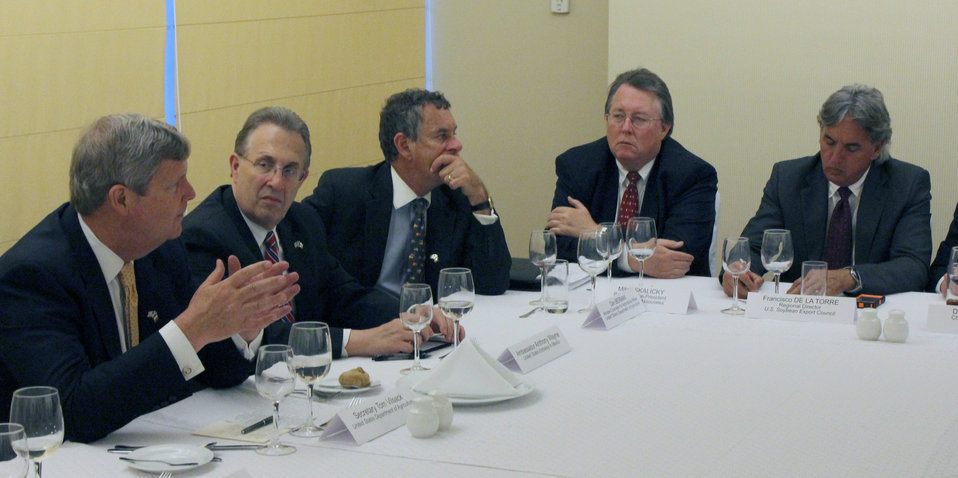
Agriculture Secretary Tom Vilsack and U.S. Ambassador to Mexico Anthony Wayne meet with Mexican producers at the U.S. Trade Mission to Mexico on Friday, May 17, 2013.